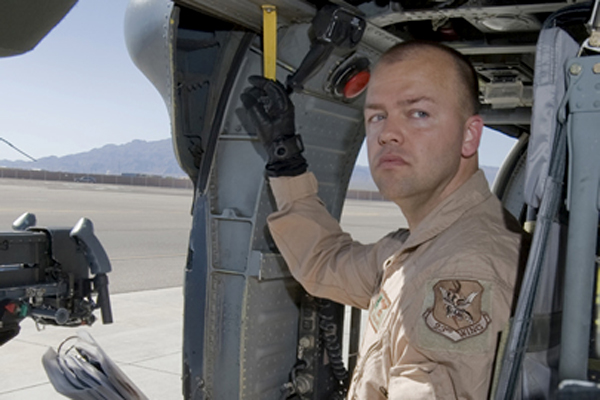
Wounded Warrior

Staff Sgt. David Mullikin conducts a preflight check on an HH-60 Pave Hawk June 23, 2011, at Nellis Air Force Base, Nev. Sergeant Mullikin is a flight engineer assigned to the 66th Rescue Squadron. He returned from a tour in Iraq suffering from post-traumatic stress disorder and got help through the Air Force Wounded Warrior program.